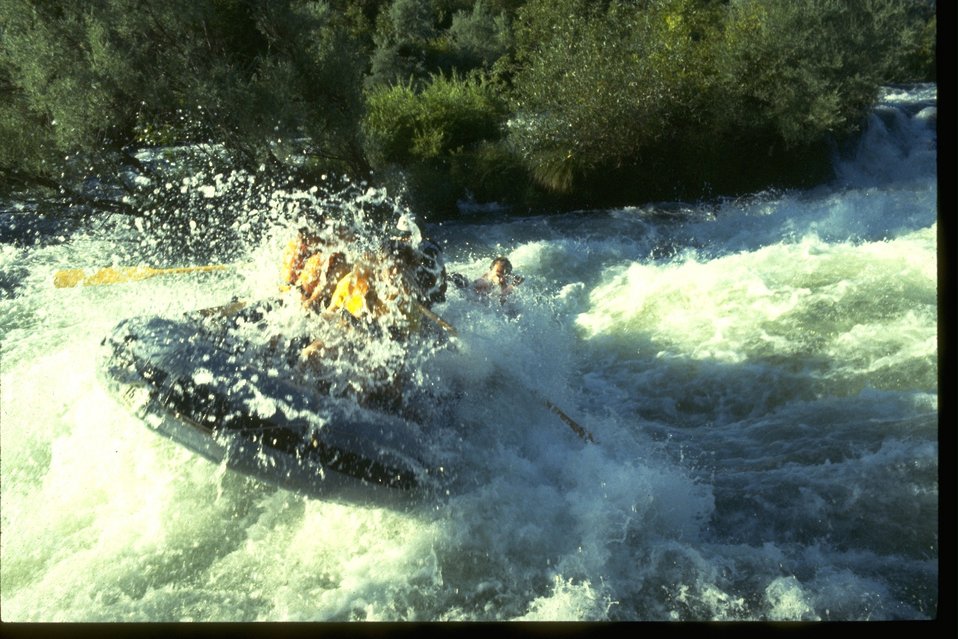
Rafting through the whitewater rapids of Nugget Falls on the Rogue River.